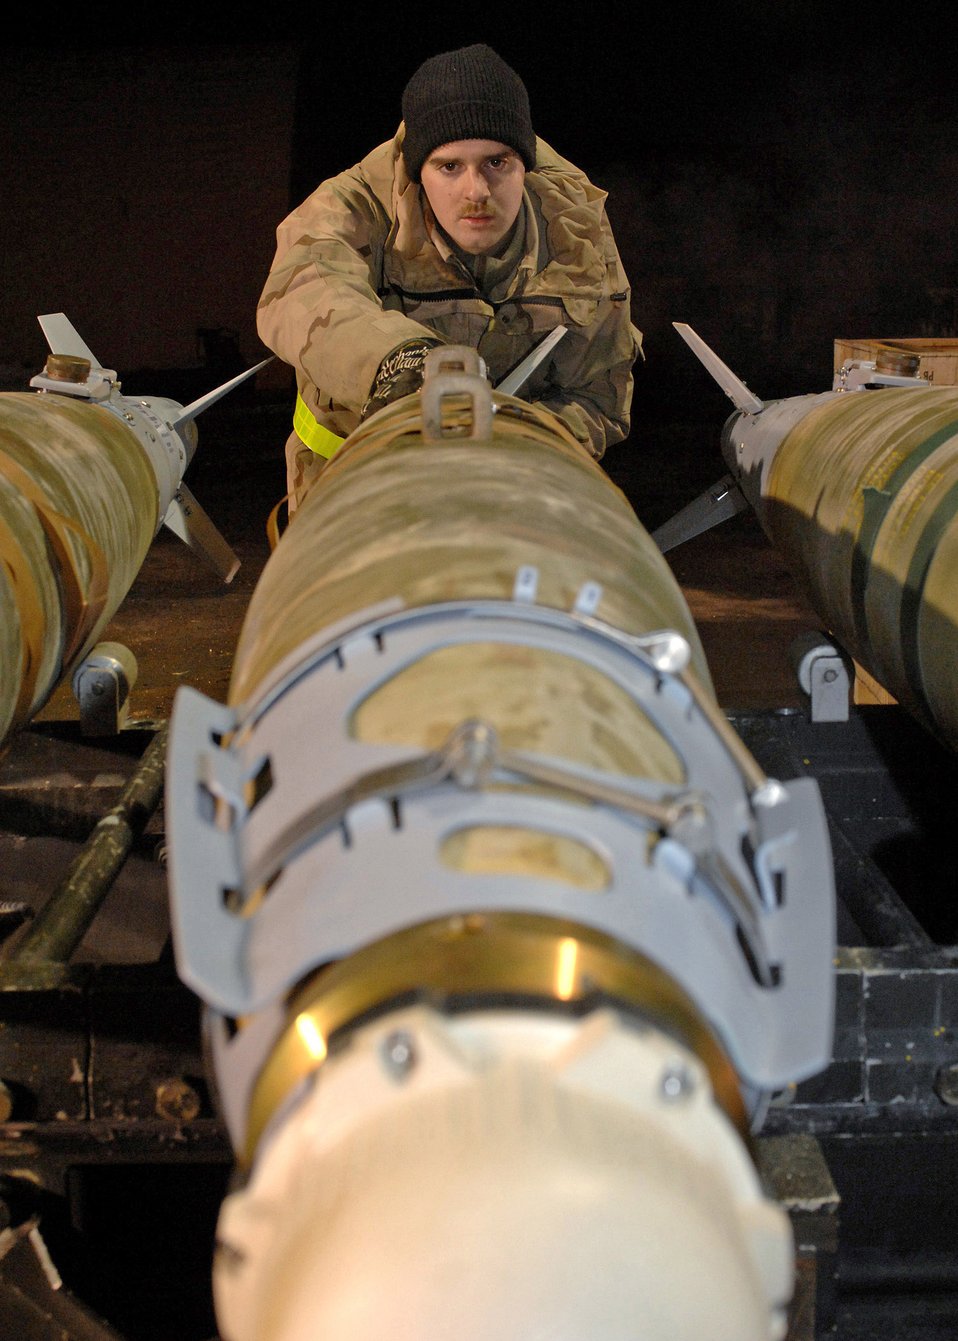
Just an inch more...

Airman 1st Class Ryan Thompson aligns a GBU-38 bomb at Bagram Air Base, Afghanistan, Feb. 14. The Airman is with the 455th Expeditionary Maintenance Squadron.